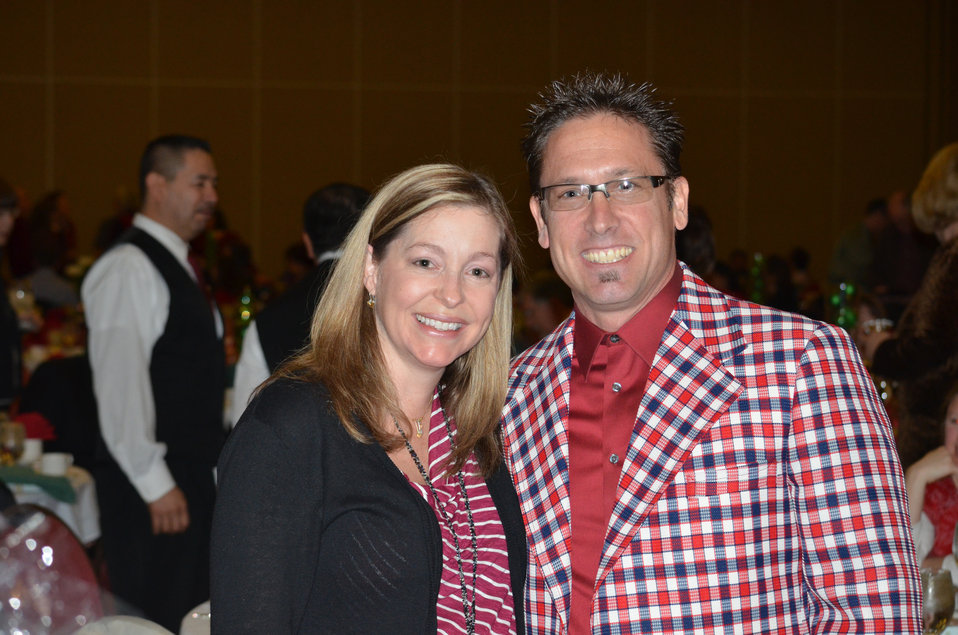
Sacramento District Holiday Party 2011